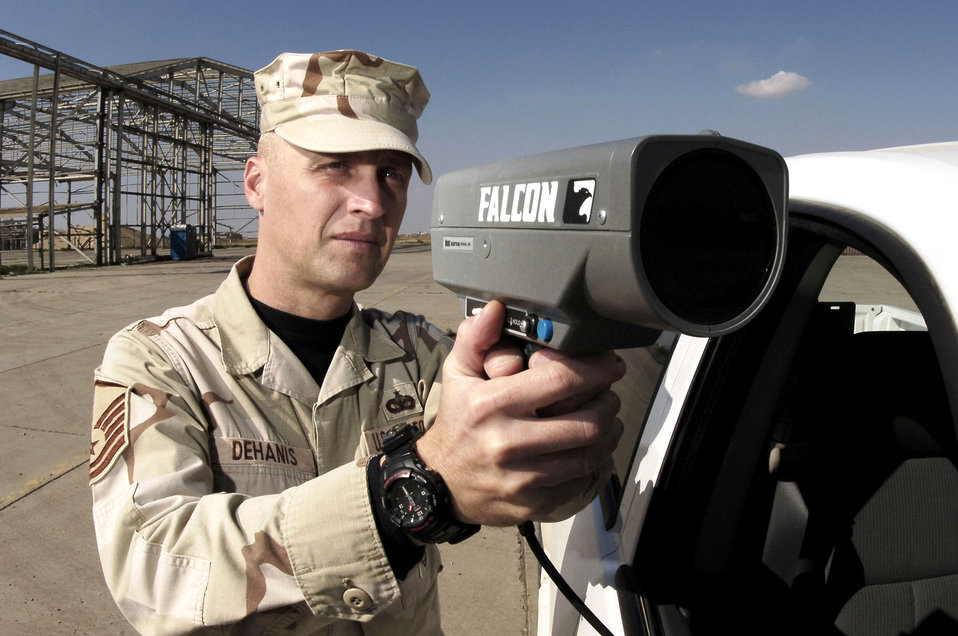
Maintaining security at Kirkuk

Master Sgt. John Dehanis operates a radar gun Feb. 19 at Kirkuk Air Base, Iraq. Sergeant Dehanis ensures that no one is dangerously speeding on the installation. He is a member of the 506th Expeditionary Security Forces Squadron.